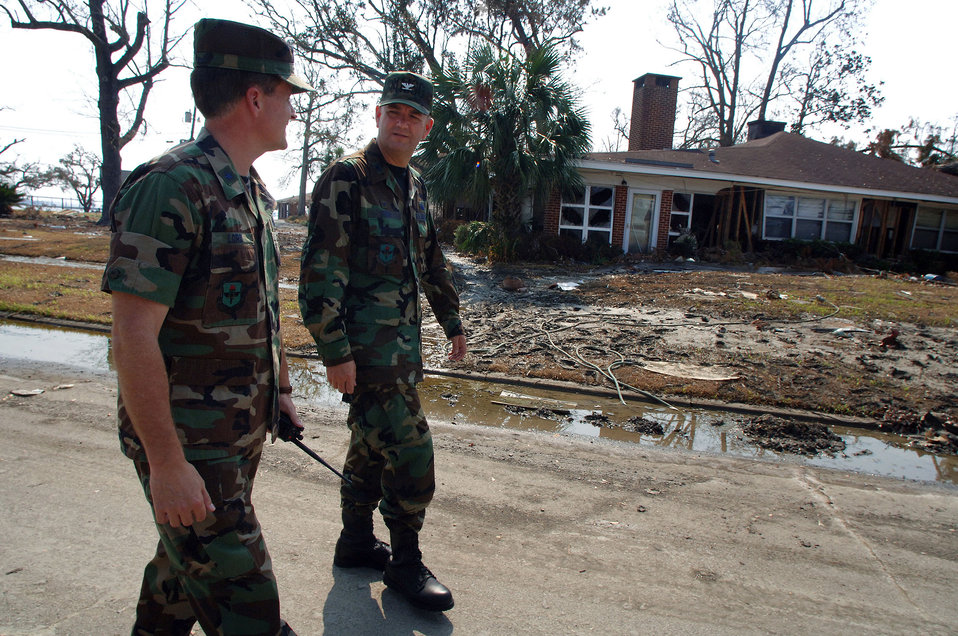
Keesler commander: Don't count us out

KEESLER AIR FORCE BASE, Miss. -- Brig. Gen. William T. Lord (left) walks with Col. Bruce Bush in a housing area here that was hit by Hurricane Katrina. General Lord is the 81st Training Wing commander, and Colonel Bush is the 81st Mission Support Group commander.